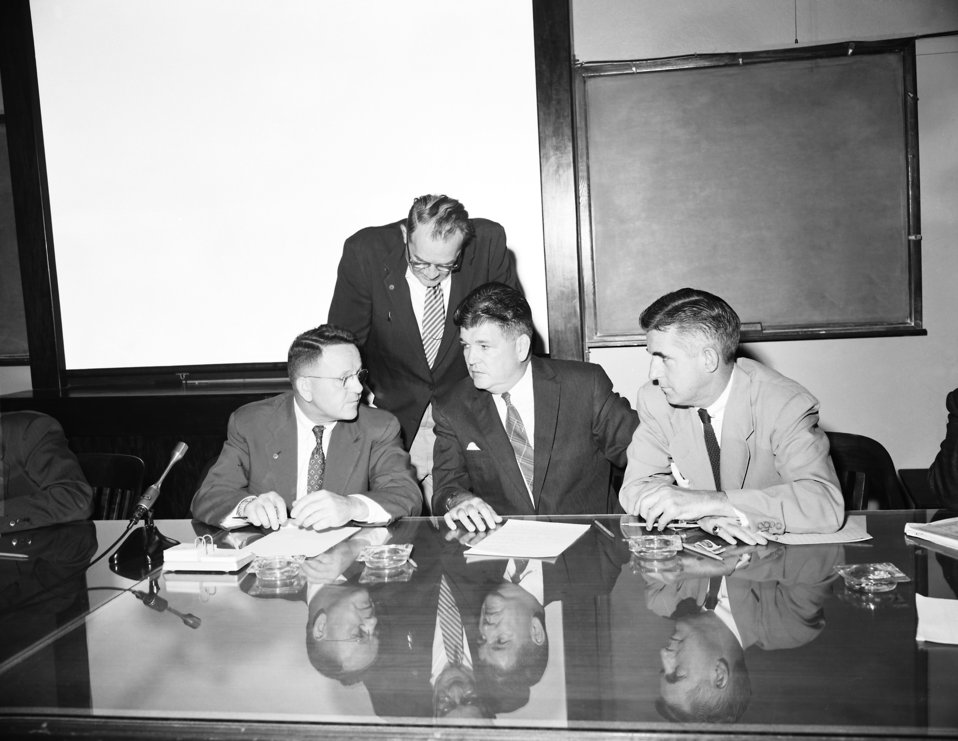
This 1956 photograph depicts four CDC officials during a bid opening meeting for the construction of new CDC facilities.